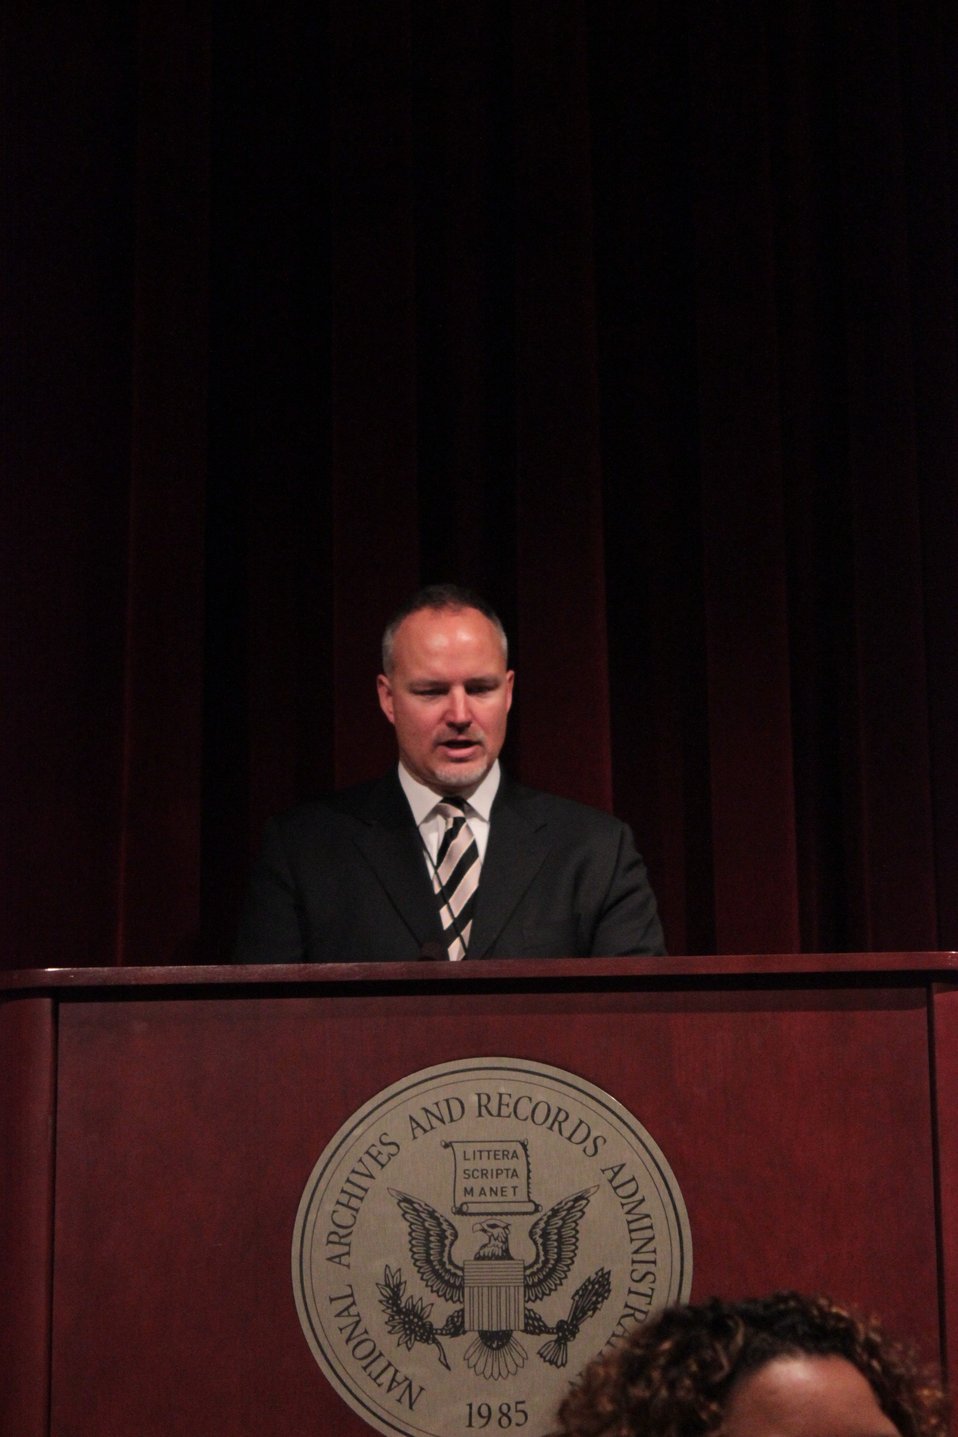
Office of the Federal Regster Director Charley Barth presenting at the Second Annual Federal Register Liaison Conference; Location: Archives 1 - McGowan Theater, Washington, D.C.